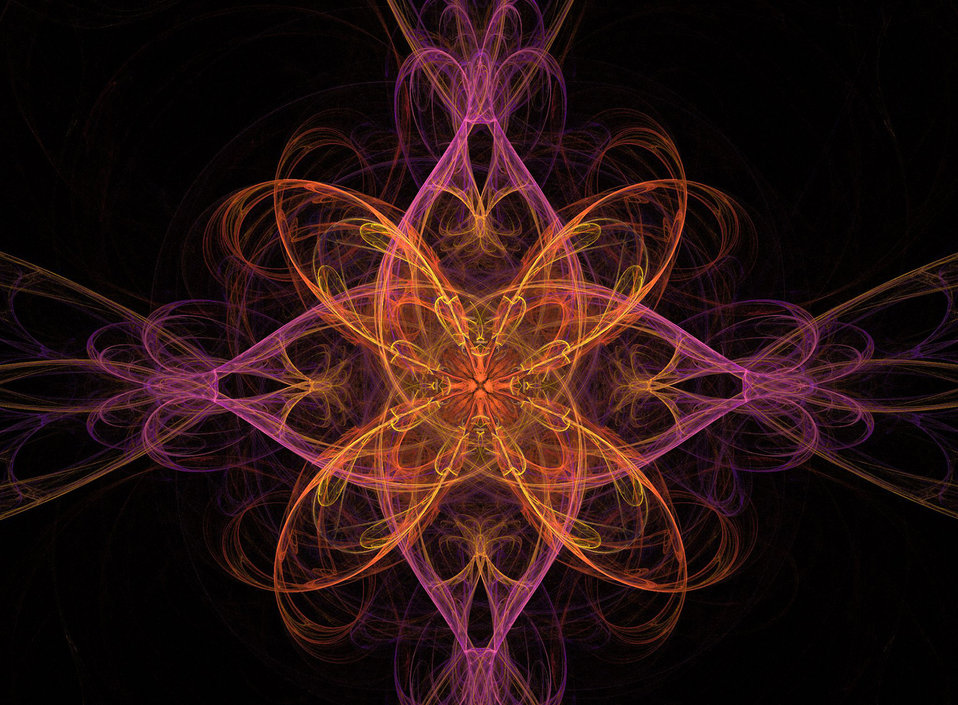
Fractal

Variation of a theme.